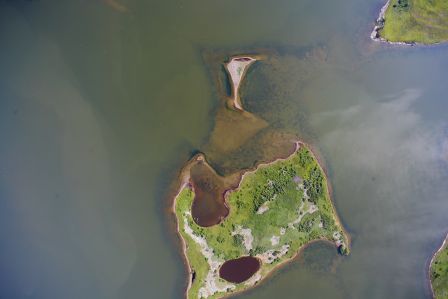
Aerial view of Chase Lake National Wildlife Refuge

Aerial view of one of three nesting islands at Chase Lake National Wildlife Refuge in North Dakota.